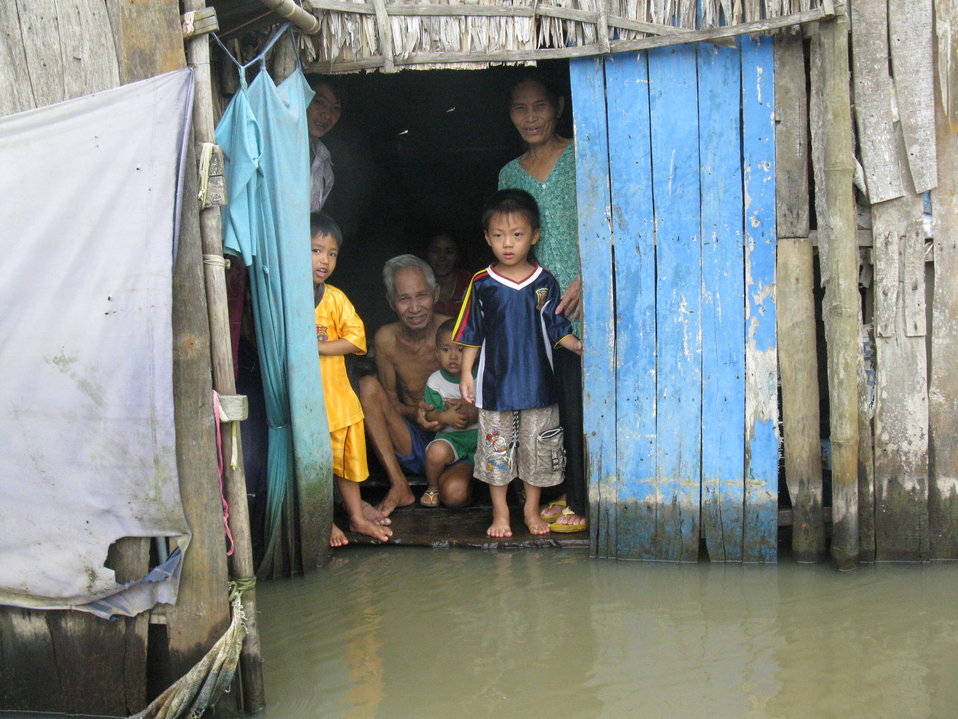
Family receiving USAID assistance in Long An Province

November 8, 2011